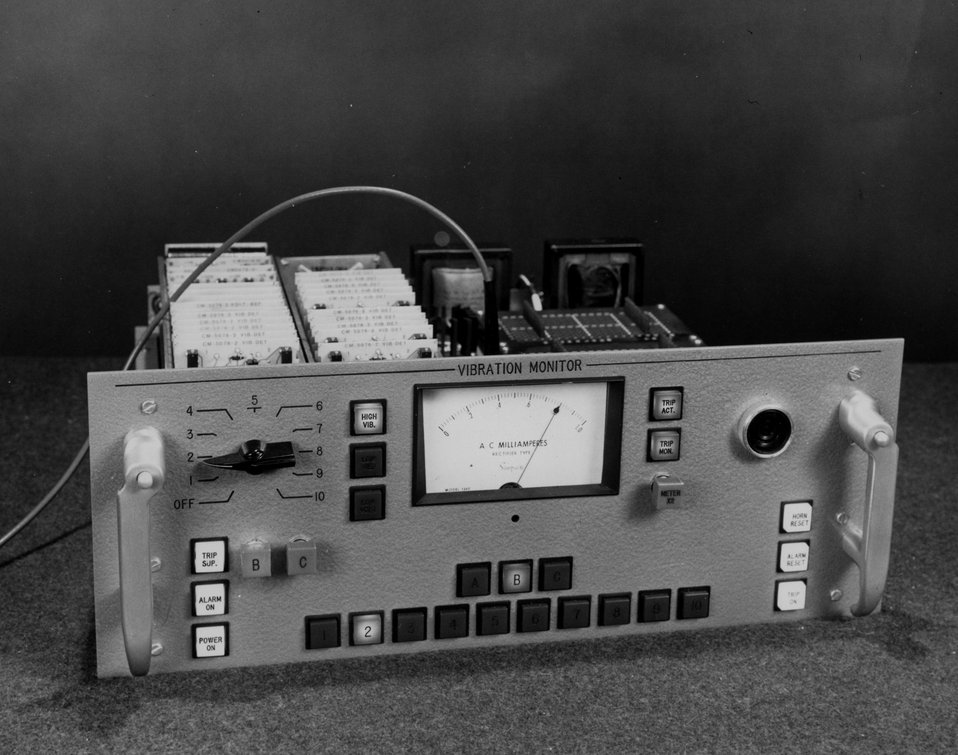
A multi-point vibration monitoring system for measuring vibration emanating from rotating equipment has been designed by the Paducah Gaseous Diffusion Plant, Paducah, Kentucky. c. 1972